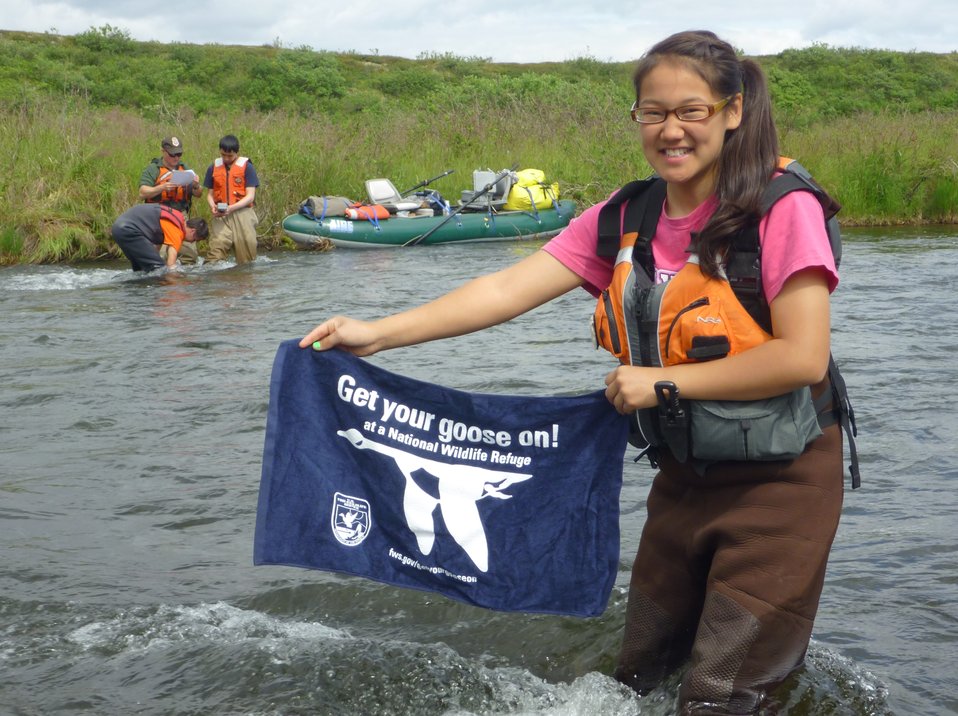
GYGO! - Alaska Style!

These youngsters Get Their Goose On! at Togiak National Wildlife Refuge in southwest Alaska.

The refuge supports 35 species of fish, 30 species of terrestrial mammals, 17 species of marine mammals, and 201 bird species.